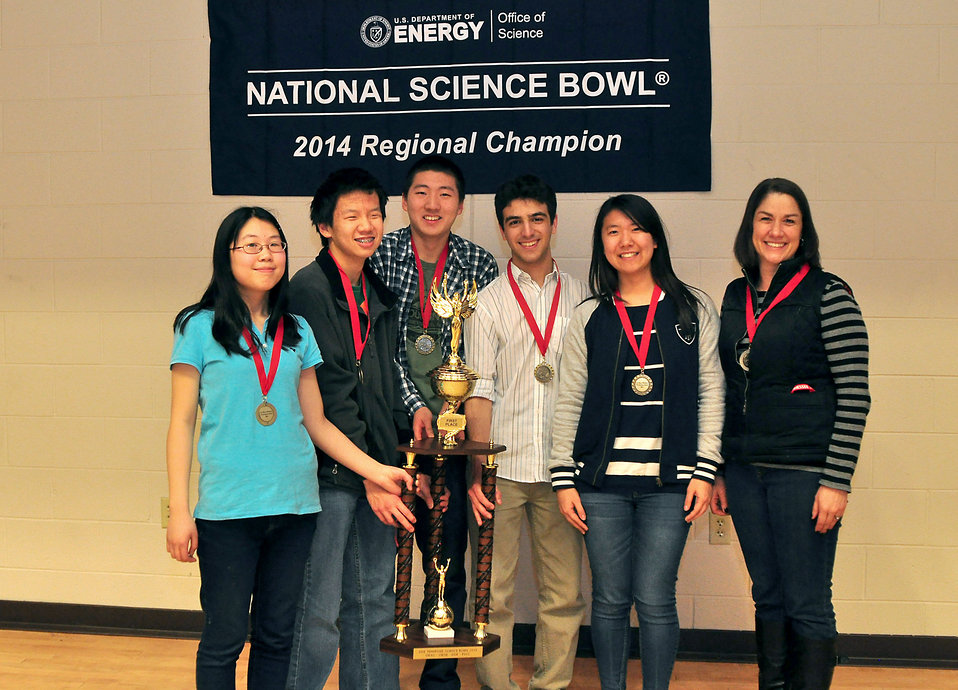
First Place Oak Ridge HS 2014 TN DOE Science Bowl

14-026 DOE photo Lynn Freeny 2-22-2014 First Place Oak Ridge with trophy Left to Right Tina Wang, Albert Xue, Gaibo Zhang, Aram Bejnood, Bonnie Moon, Coach Sharon Thomas